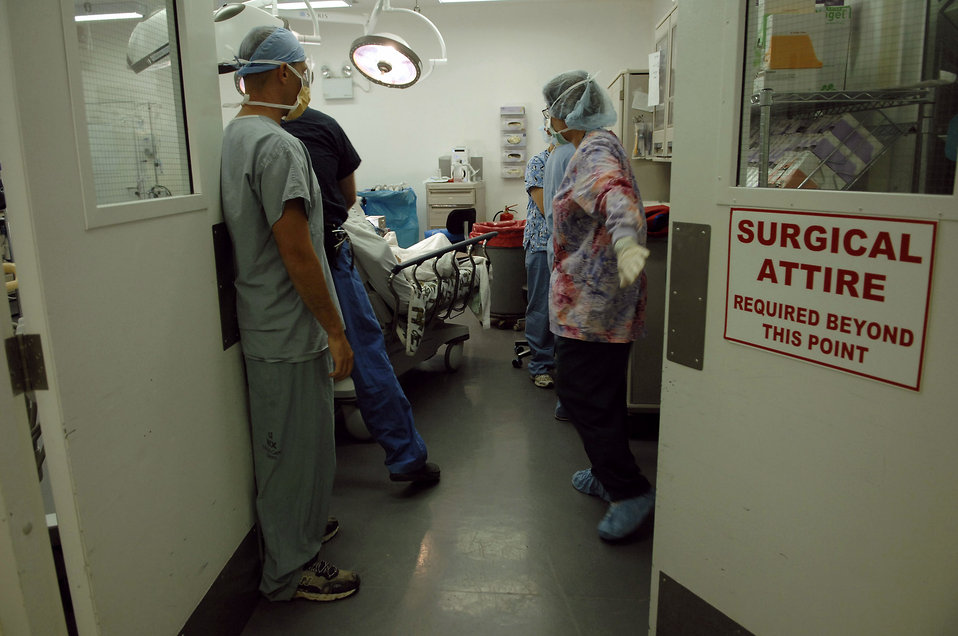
A new leg to stand on

Orthopedic technicians wheel an Iraqi policeman into the surgical area July 2 at Joint Base Balad, Iraq. The policeman needs follow-up surgery on a lower extremity injury that is not healing correctly. The bones in his lower leg have failed to rejoin, requiring a bone graft to be done. A rod and screws will be used to help the patient regain the ability to walk again. The technicians are with the 332nd Expeditionary Medical Operations Squadron.